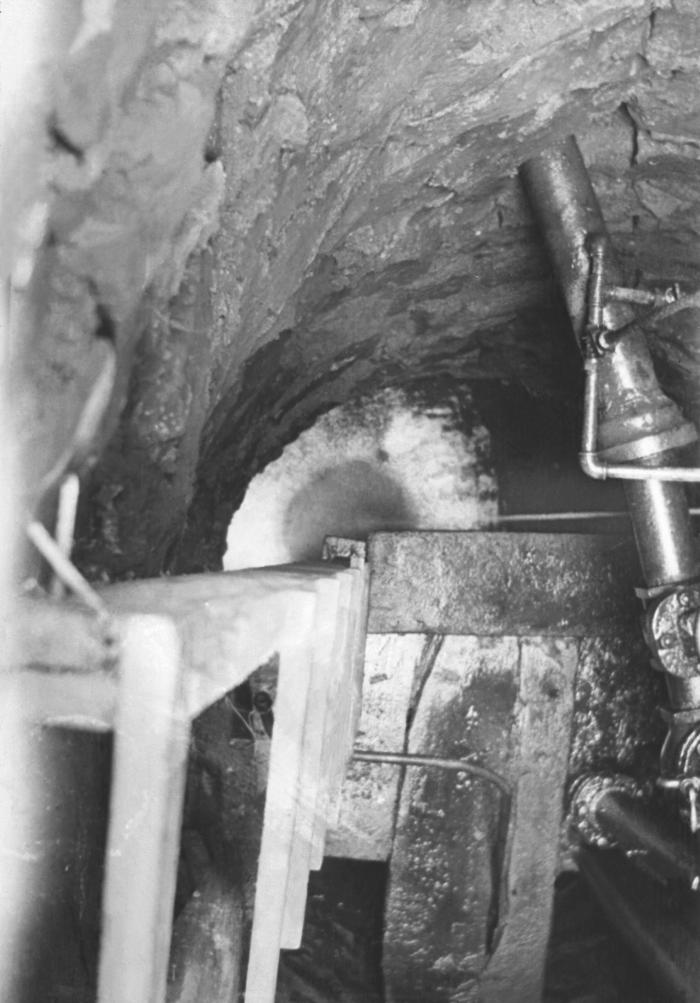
This historic 1915 photograph showed the interior of a municipal 'dug' well in Balaton, Minnesota. The descriptive information accompanying the image also referred to a governmental publication on the sanitation facilities observed by state public health inspectors. The specific citation was, 'Minnesota State Board of Health. Division of Sanitation, Report in Investigation of Water Supply on Balaton Report no. 78, Investigation 108, 1915'. The` desdription also stated that the image was labeled as File plate no. 94.